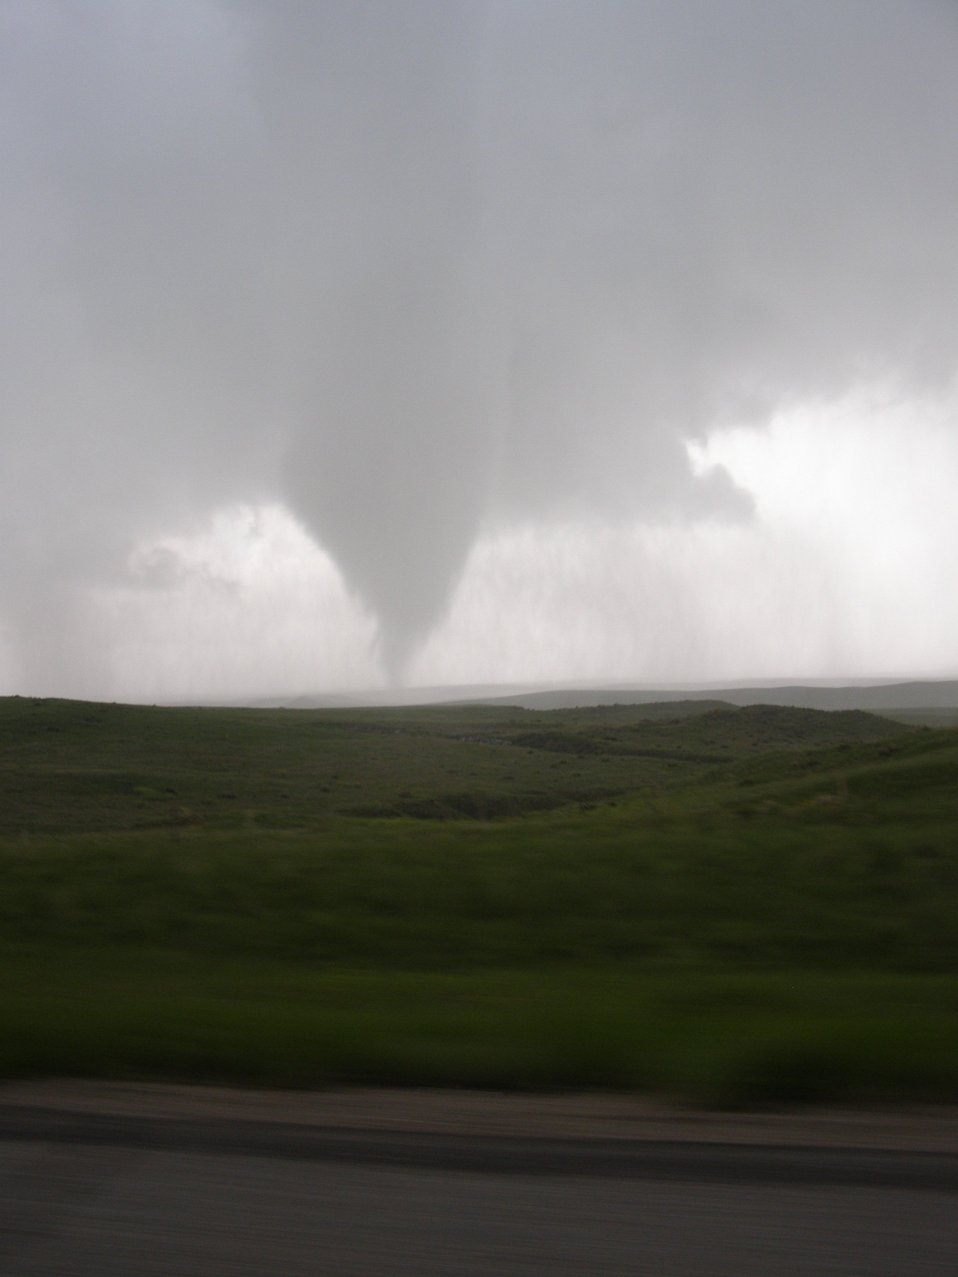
VORTEX2 intercepts a tornado in SE Wyoming on June 5, 2009.